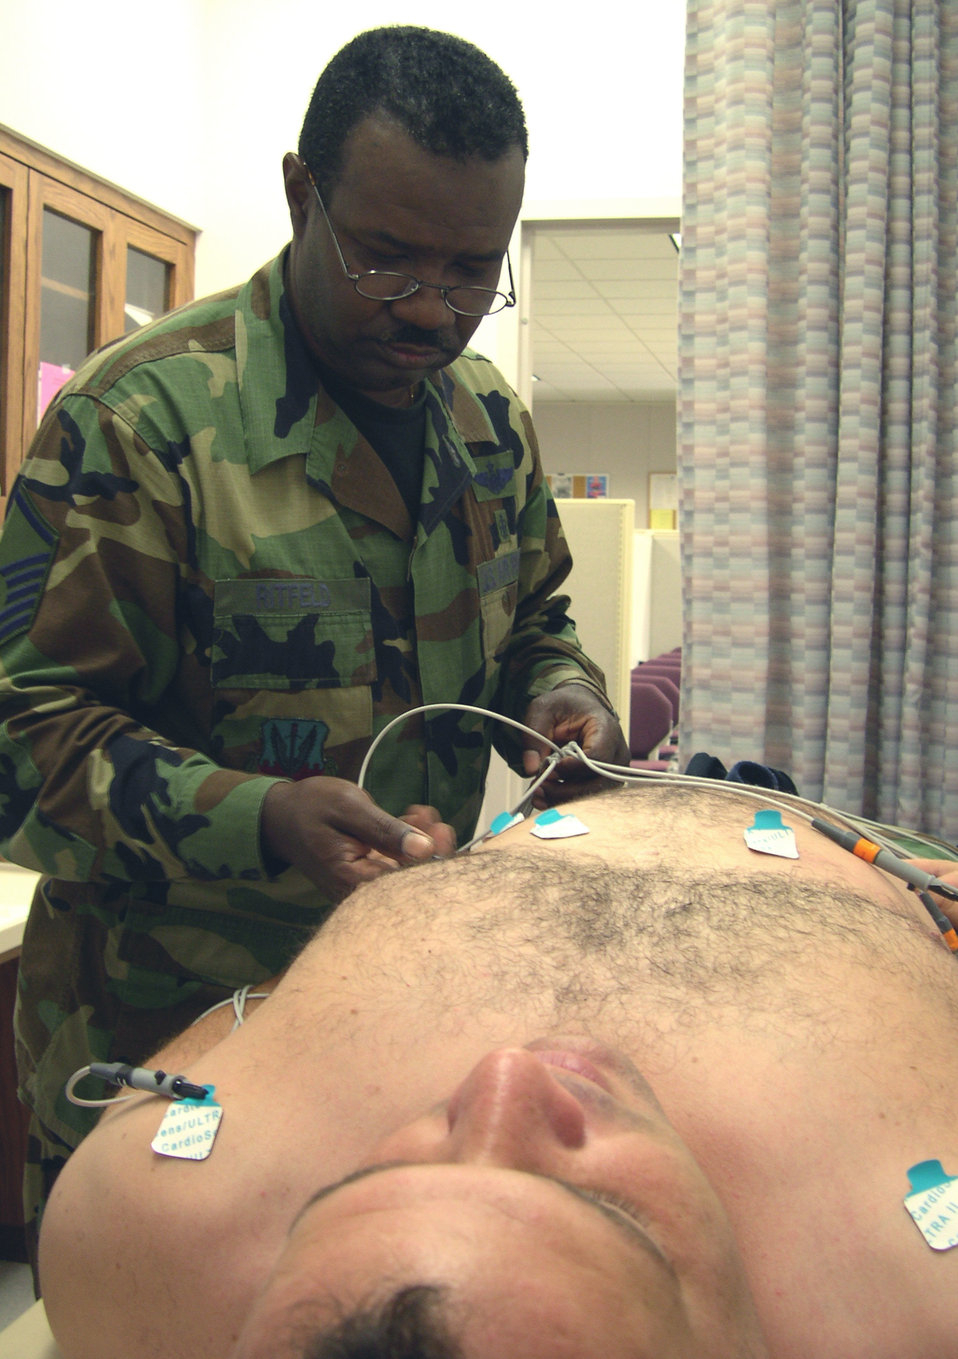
Getting connected

HOMESTEAD AIR RESERVE BASE, Fla. -- Master Sgt. Roel Ritfeld performs an electrocardiogram on Tech. Sgt. Robert Enriquez. Both sergeants are reservists with the 482nd Medical Squadron here.